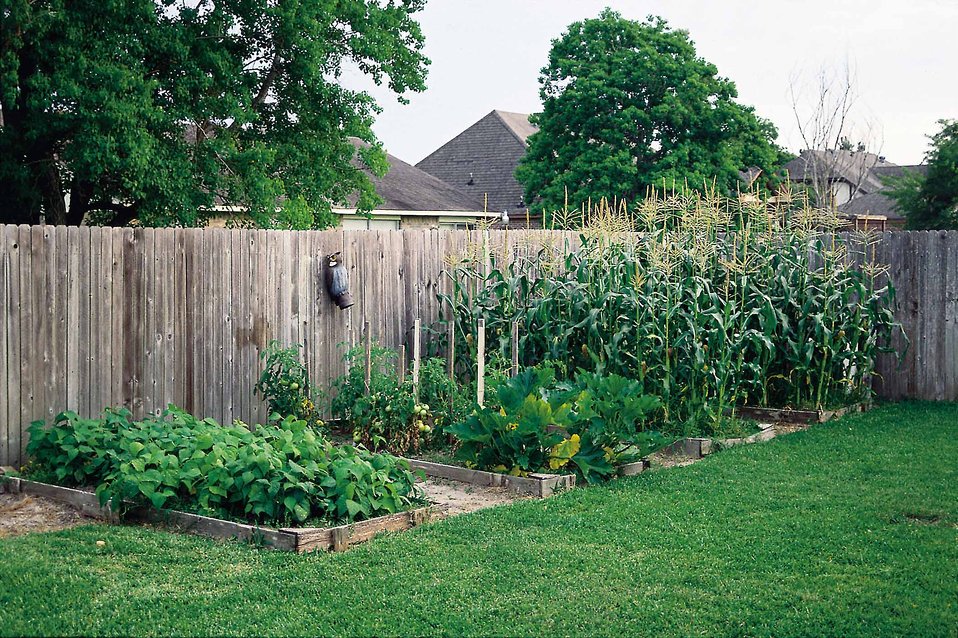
Garden grown in raised garden beds fueled by compost made in the beds.